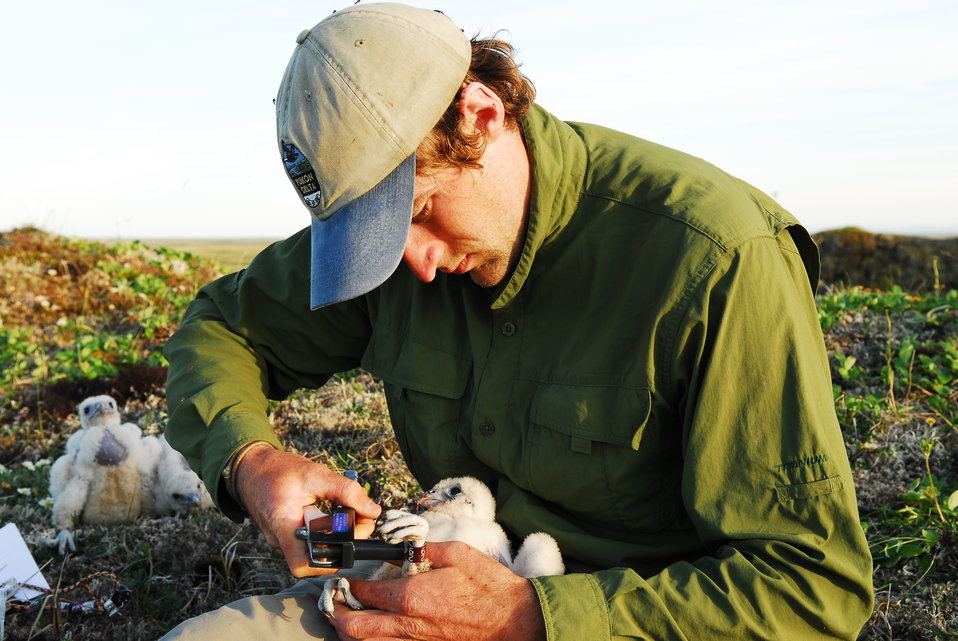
Banding a Gyrfalcon nestling

In 2004 a multi-year research project was initiated investigating Gyrfalcons within the YDNWR.
Researchers banded and collected genetic samples from each nestling that was encountered.

USFWS Yukon Delta NWR